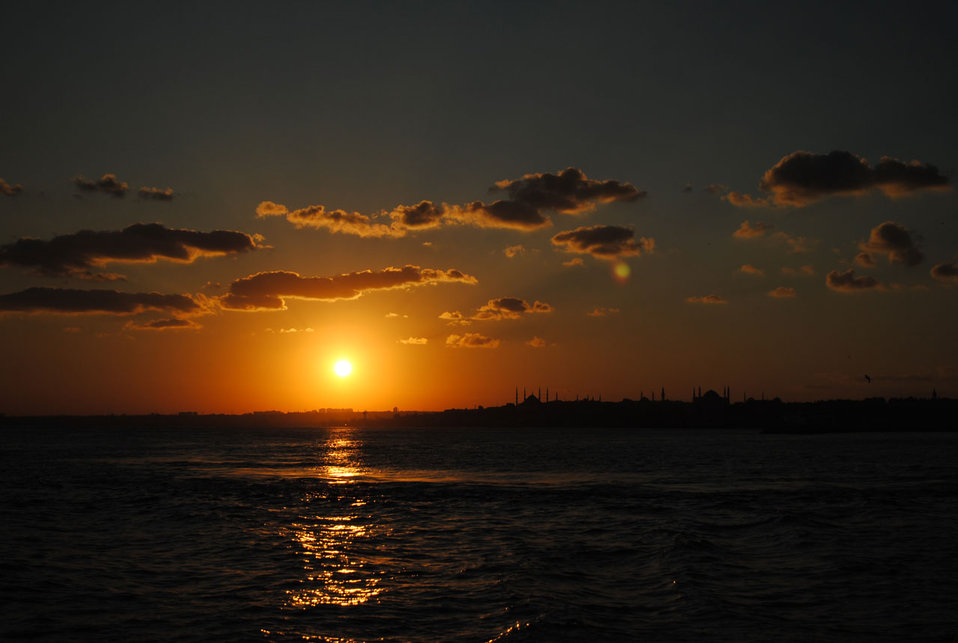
Sunset at istanbul

The sun is setting at istanbul at summertime and old peninsula laying as a silhouette at the horizon..